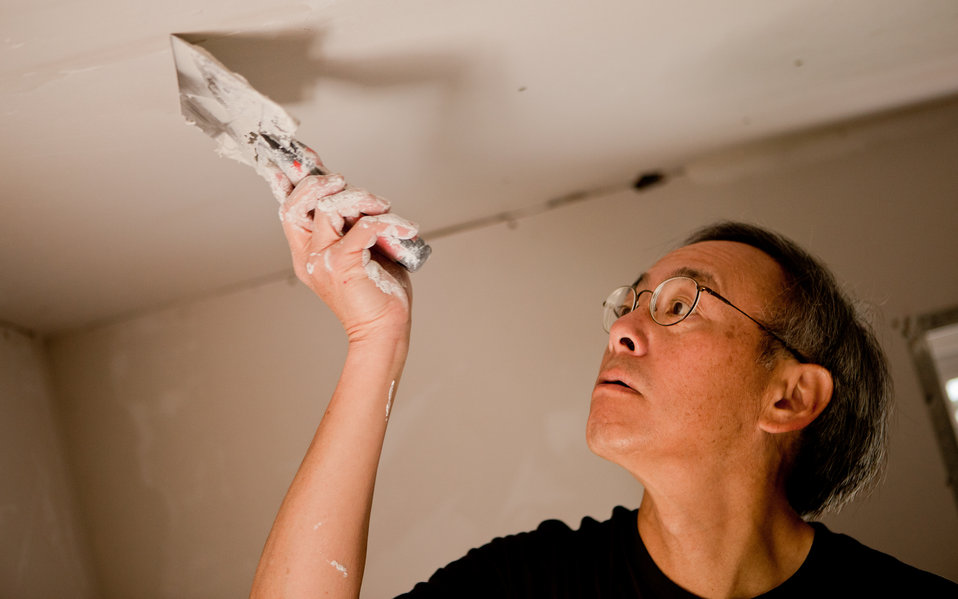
Veteran's Day in New Orleans 8 of 10

Sec. Chu mudding the ceiling.